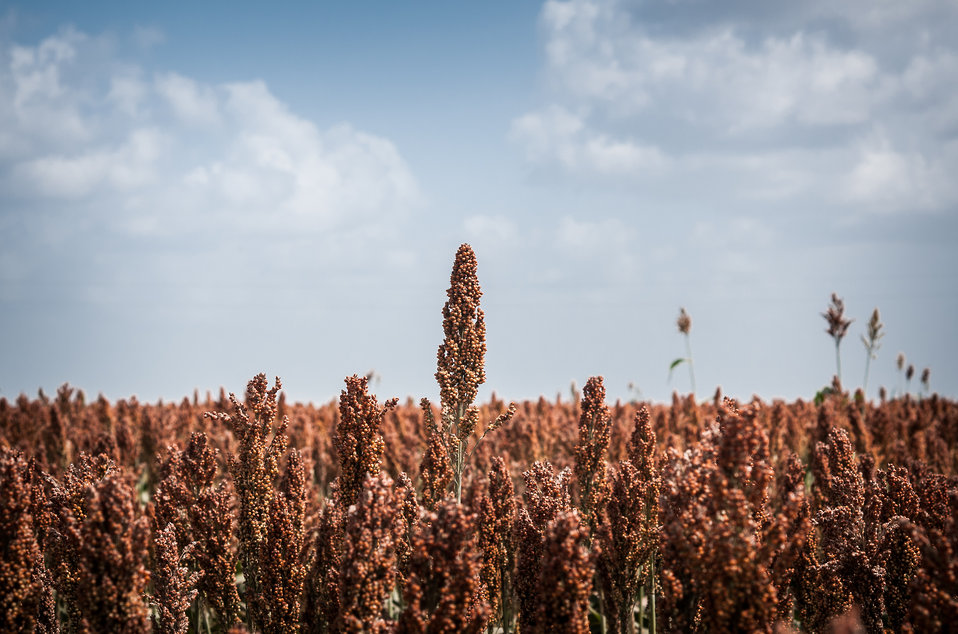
Milo (grain sorghum) grows at Popp Farms 05 (pronounced Pope) in El Campo, TX on Jun. 20, 2013. A 2,400-acre operation also grows cotton and are part of the United Agricultural Cooperative, Incorporated.